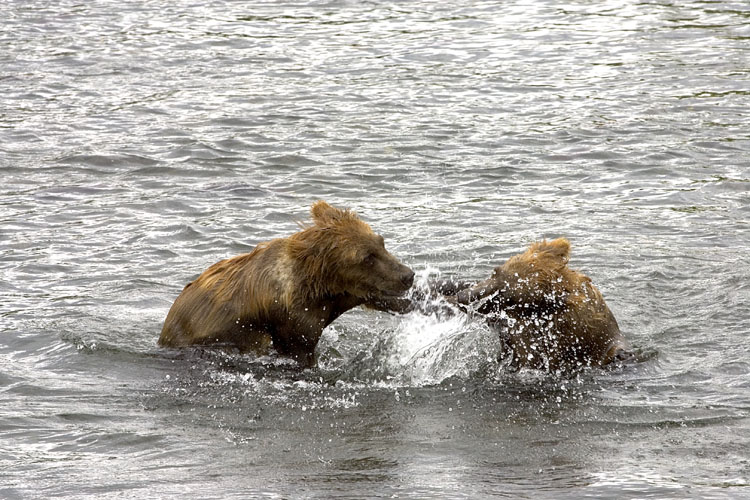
Kodiak Brown Bears

Playful Kodiak Bears